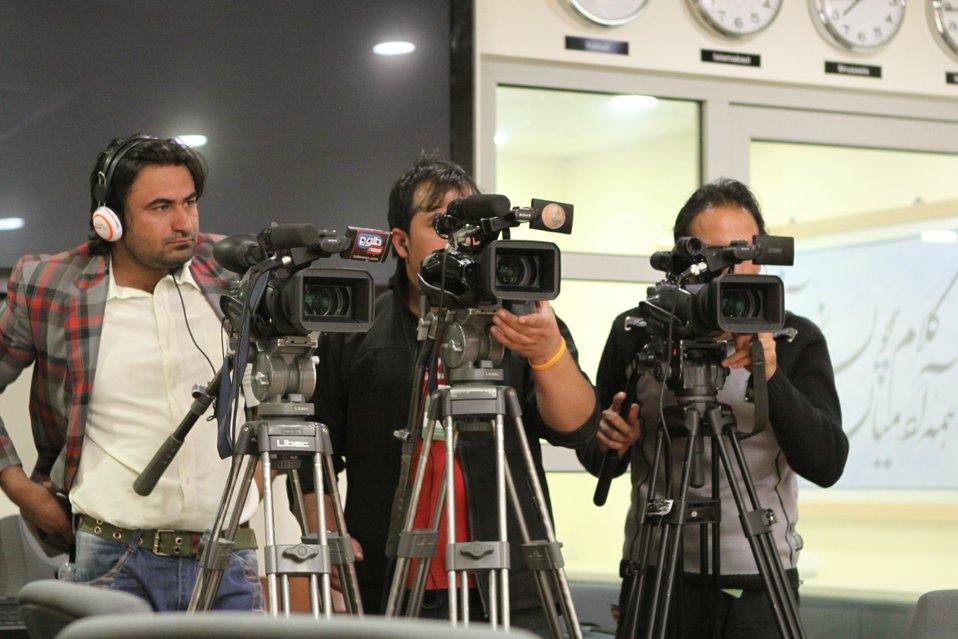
USAID Mission Director Earl Gast Conducts a Media Roundtable with Afghan Media, March 17, 2011